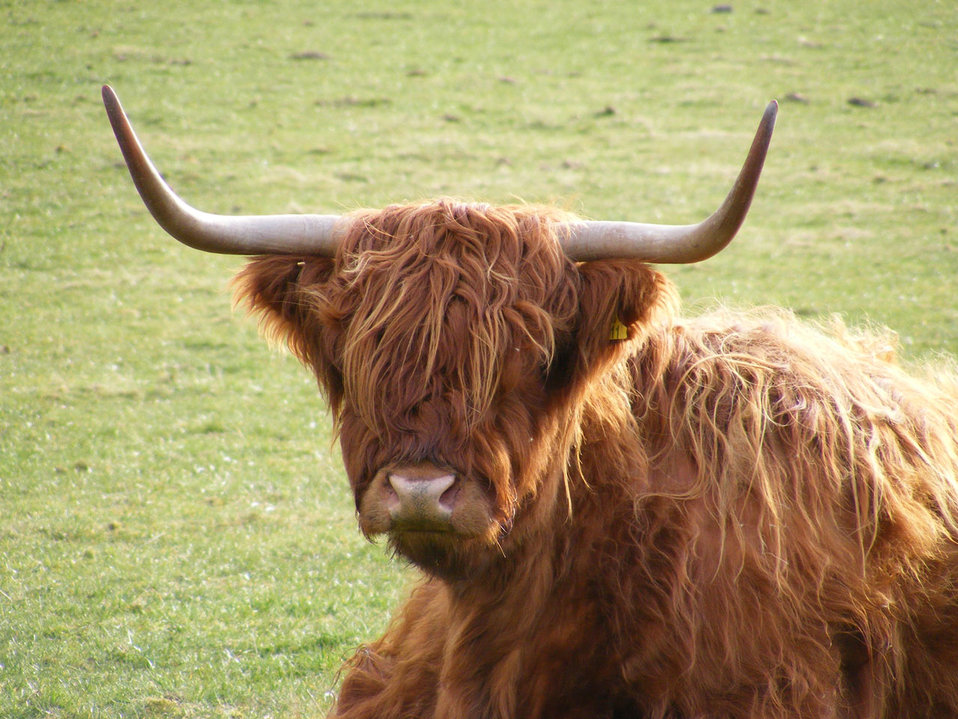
Highland cow.